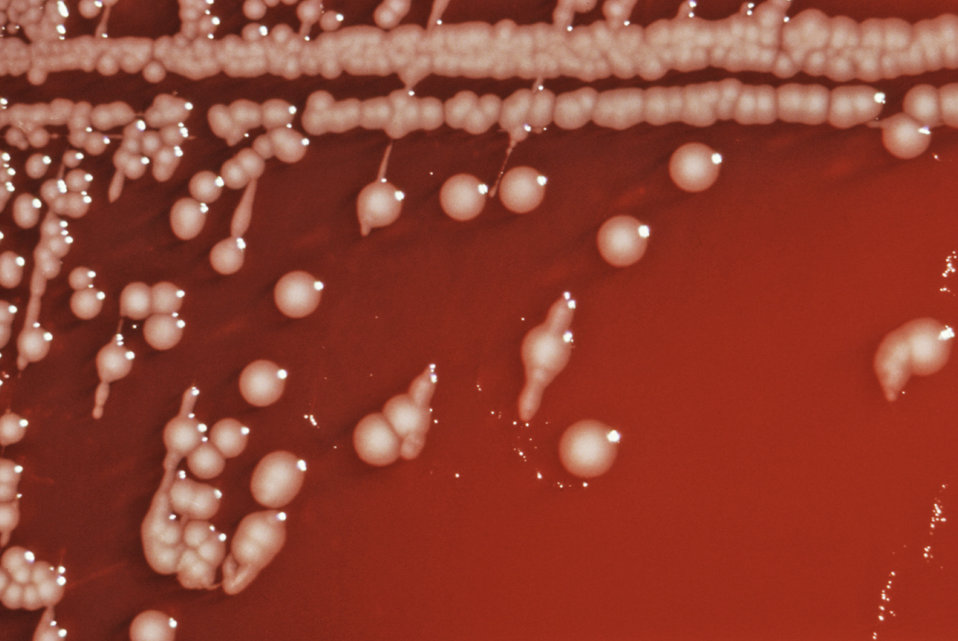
This photograph depicts the colonial growth pattern displayed by Salmonella choleraesuis subsp. arizonae bacteria grown on a blood agar culture plate.